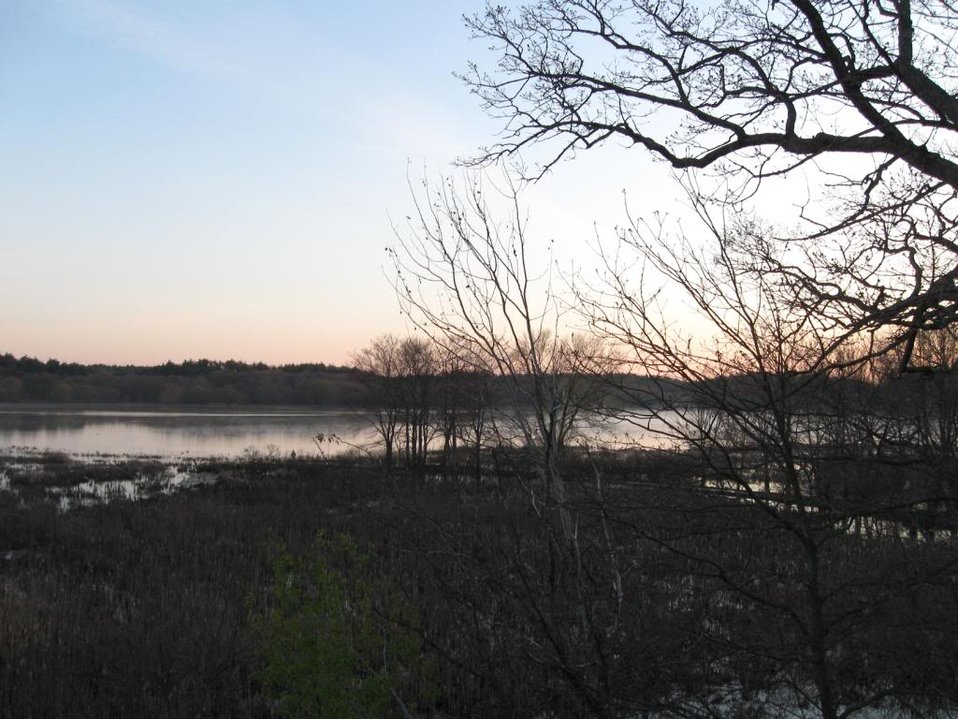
Great Meadows National Wildlife Refuge

Credit: Zachary Cava/USFWS

Great Meadows National Wildlife Refuge is part of the Eastern Massachusetts National Wildlife Refuge Complex.